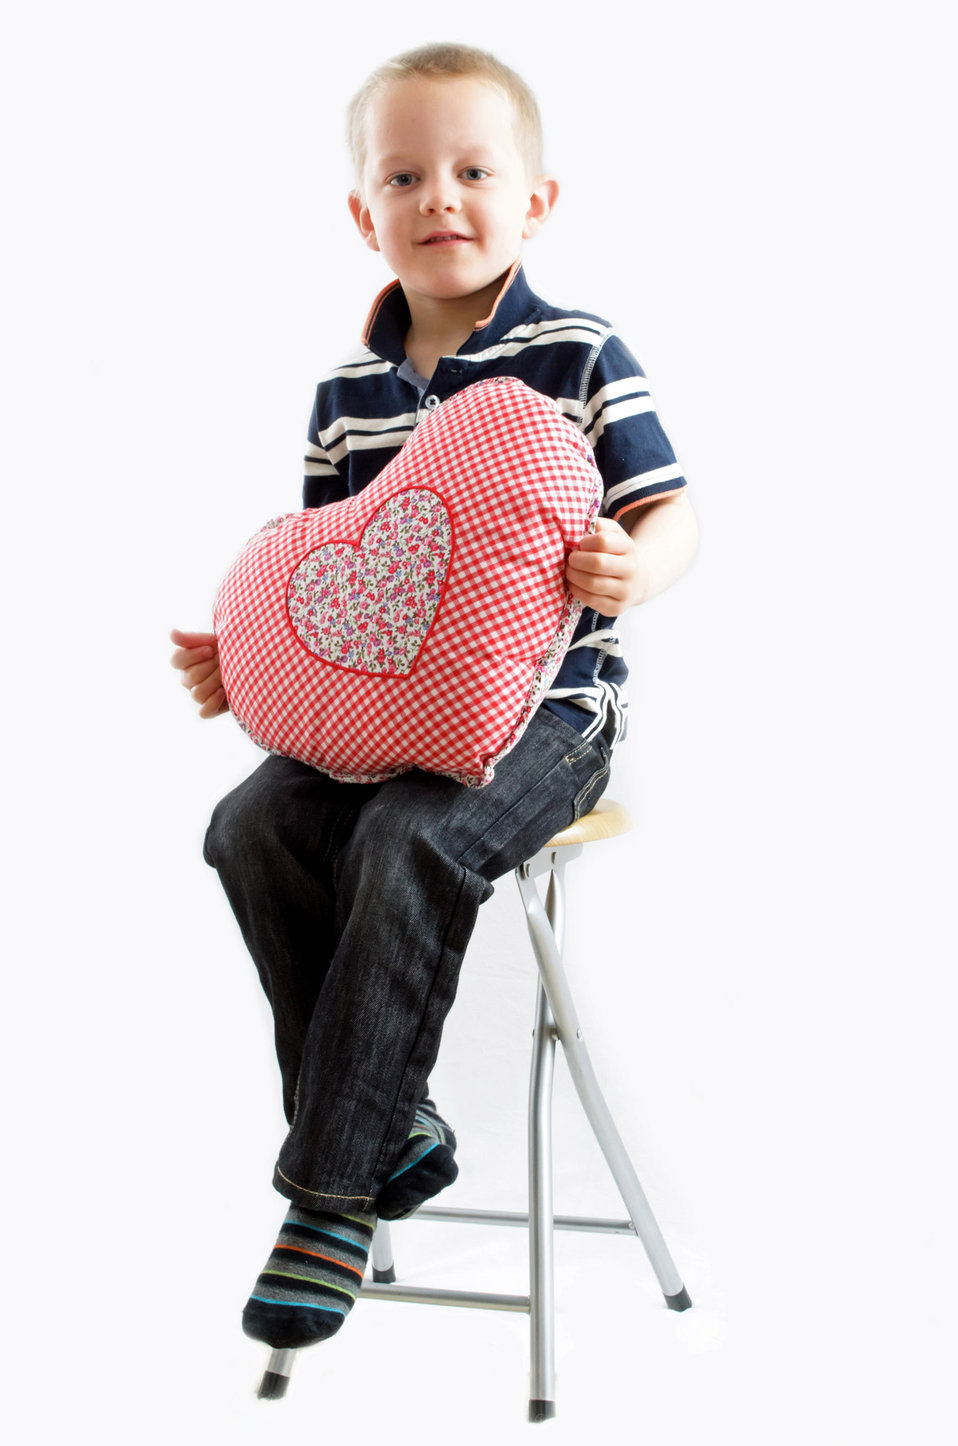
Child and heart on the white background.